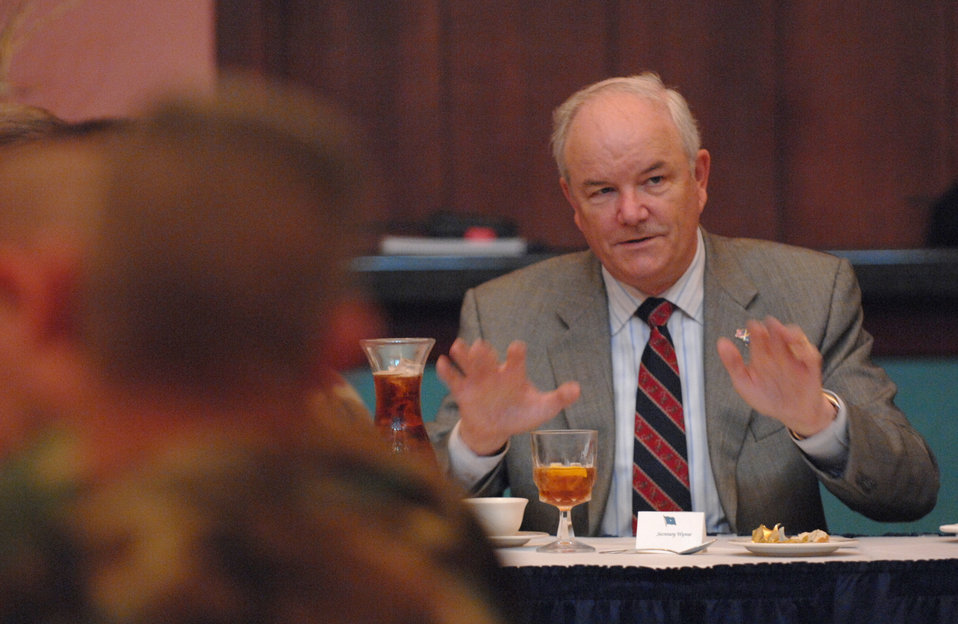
Secretary Wynne visits Aviano

Secretary of the Air Force Michael W. Wynne talks to senior noncommissioned officers at the La Bella Vista Club to get an orientation of the 31st Fighter Wing Mission Dec. 5 at Aviano Air Base, Italy. Secretary Wynne is responsible for the affairs of the Department of the Air Force, and ensures the Air Force can meet its current and future operational requirements.